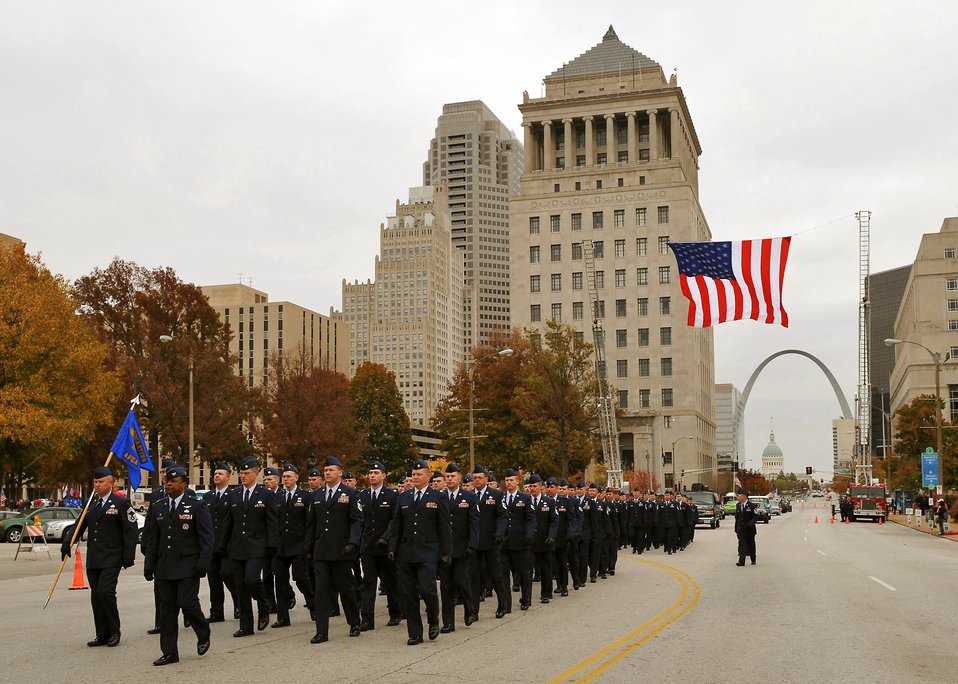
St. Louis recognizes veterans

Airmen representing the Air Force Communications Agency and Scott Air Force Base, Ill., marched in the annual Veterans Day parade Nov. 8 in downtown St. Louis. Scott AFB people participated in various Veterans Day observances throughout the St. Louis metro area.